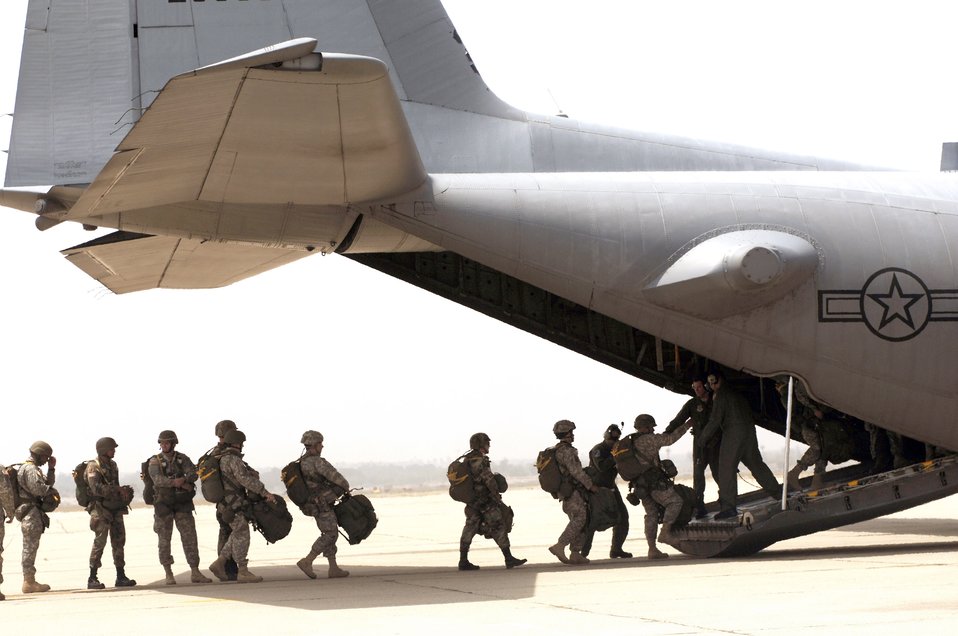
Exercise tests fast-response unit's capabilities

Army Reserve Soldiers from the 426th Civil Affairs Battalion's Bravo Company at Upland, Calif., load a C-130 Hercules June 2 in preparation for an airdrop in support of the weeklong exercise Operation Hydra. Operation Hydra provides realistic training scenarios, exercising the 615th Contingency Response Wing's ability to conduct expeditionary mobility operations at three locations. The wing is practicing its